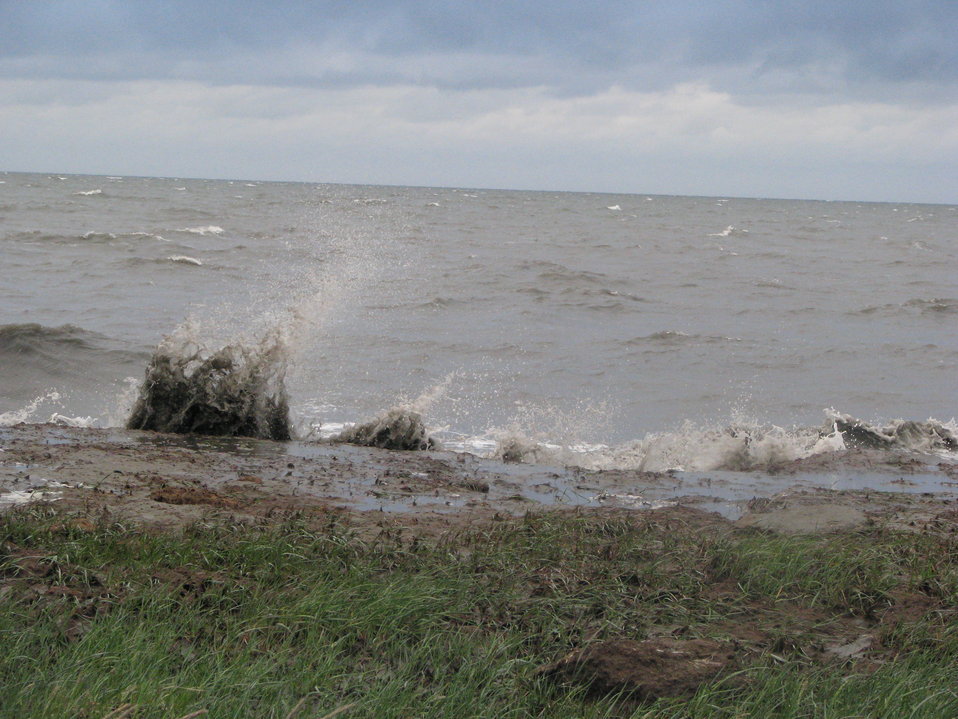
Waves along the coast

Yukon Delta NWR